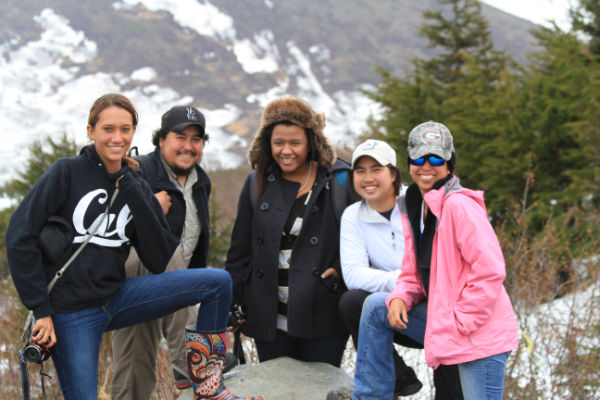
2012-Alaska Region-Work(07)

Alaska Career Discovery Internship Program is partnership with the Student Conservation Association to provide a 12 week internship to college freshman and sophomores to discover careers with the U.S. Fish and Wildlife Service.

Once in Alaska interns convened in Anchorage to acclimatize to the 'Far North' and receive more training including: bear safety, aviation safety, and more.